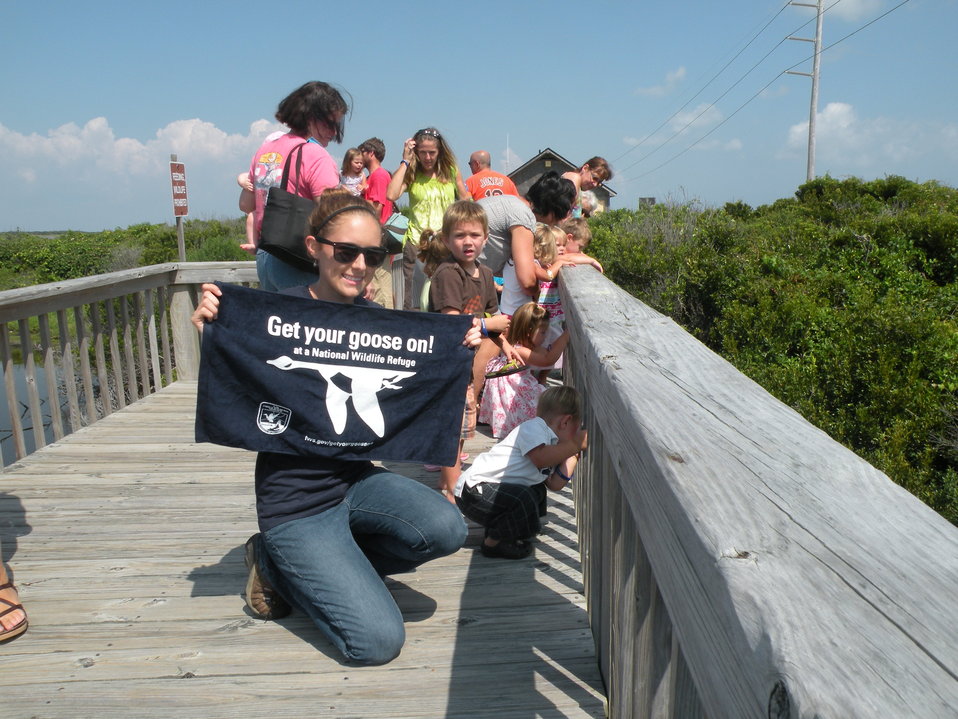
Get Your Goose On!

Outer Banks Mommy and Me group enjoy learning about turtles and Get there Goose on!

Cindy Heffley/USFWS